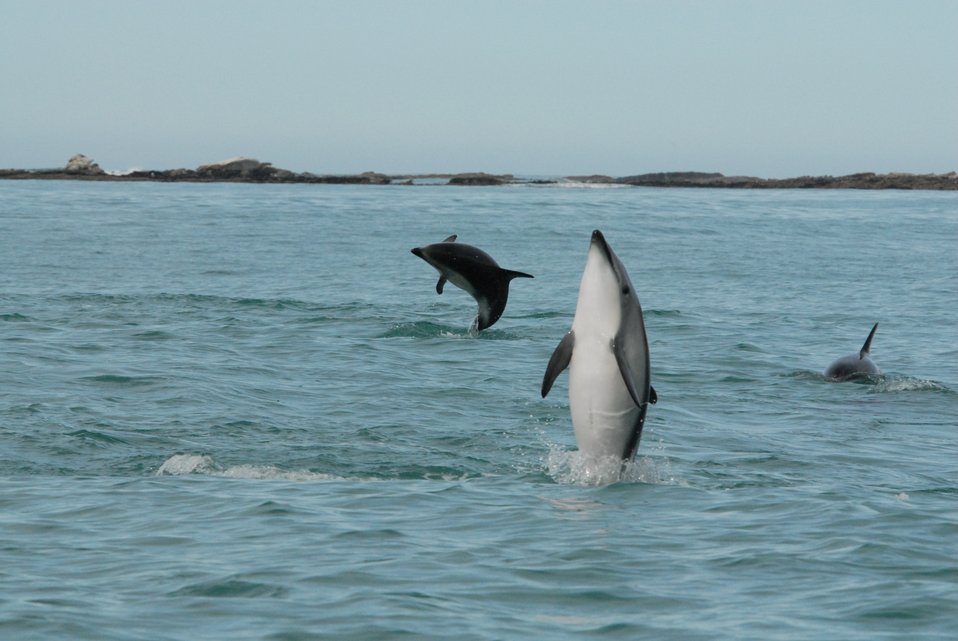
Dusky dolphin (Lagenorhynchus obscurus)